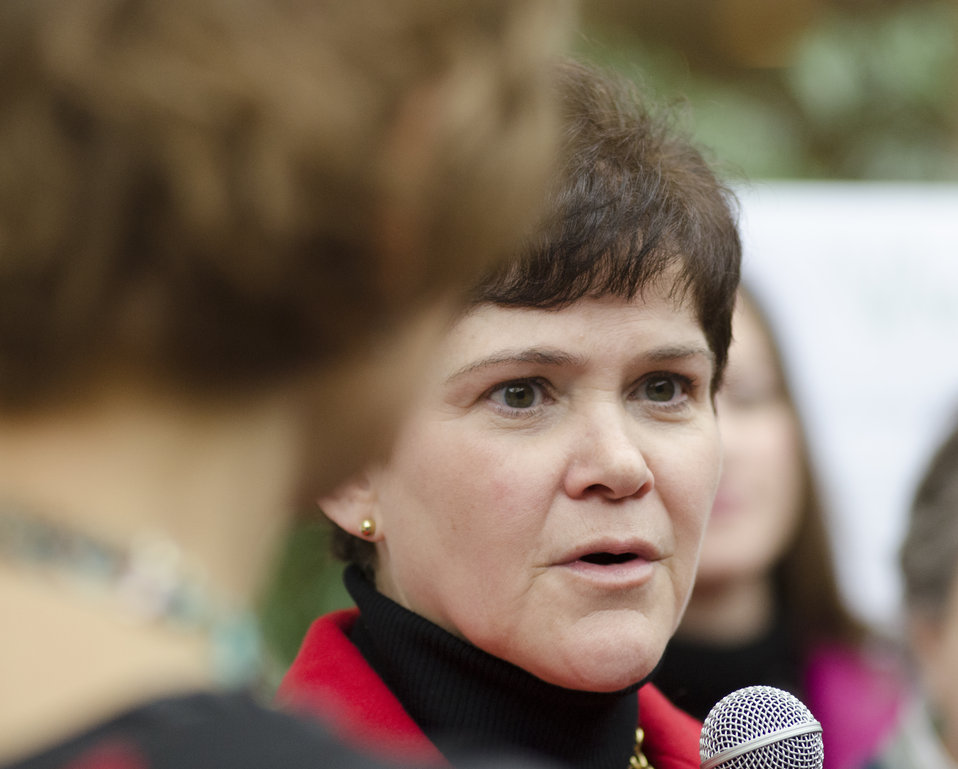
The U.S. Department of Agriculture (USDA) 2013 Agricultural Outlook Forum was held at the Crystal Gateway Marriott Hotel in Arlington, VA on Friday, Feb. 22, 2013. Agriculture Chief of Staff Krysta Harden participated in the Women in Agriculture-Speed Networking Event, which encouraged and promoted the participation of women in American agriculture.